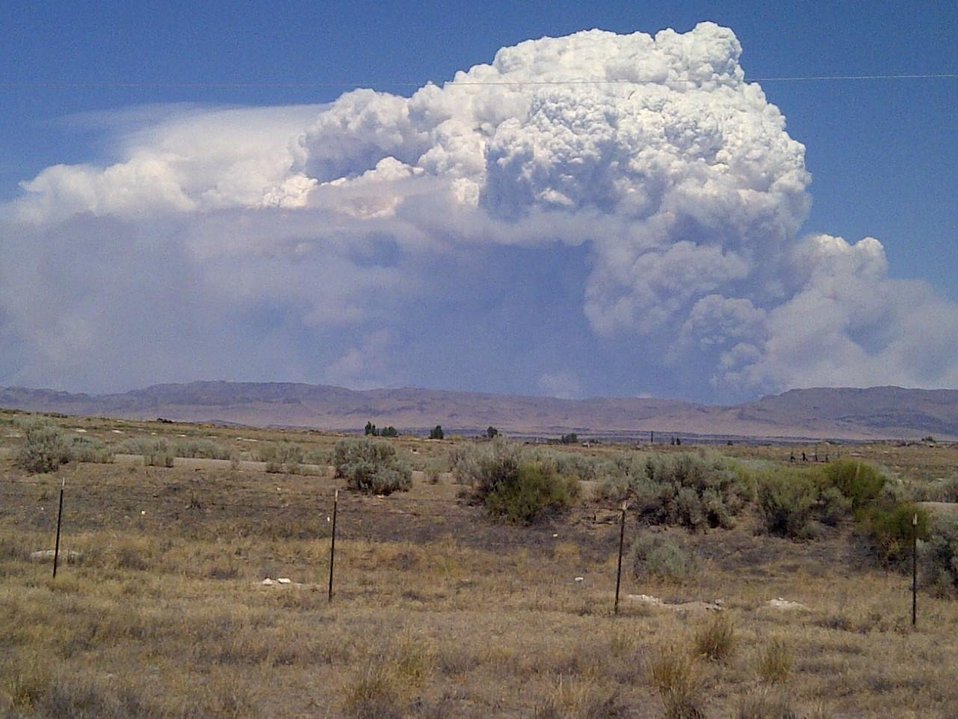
The Elk Complex Fire in the Boise National Forest near Pine, ID began on Aug. 08, 2013 by lightning has consumed approximately 98,413 acres and is approximately 5% contained.